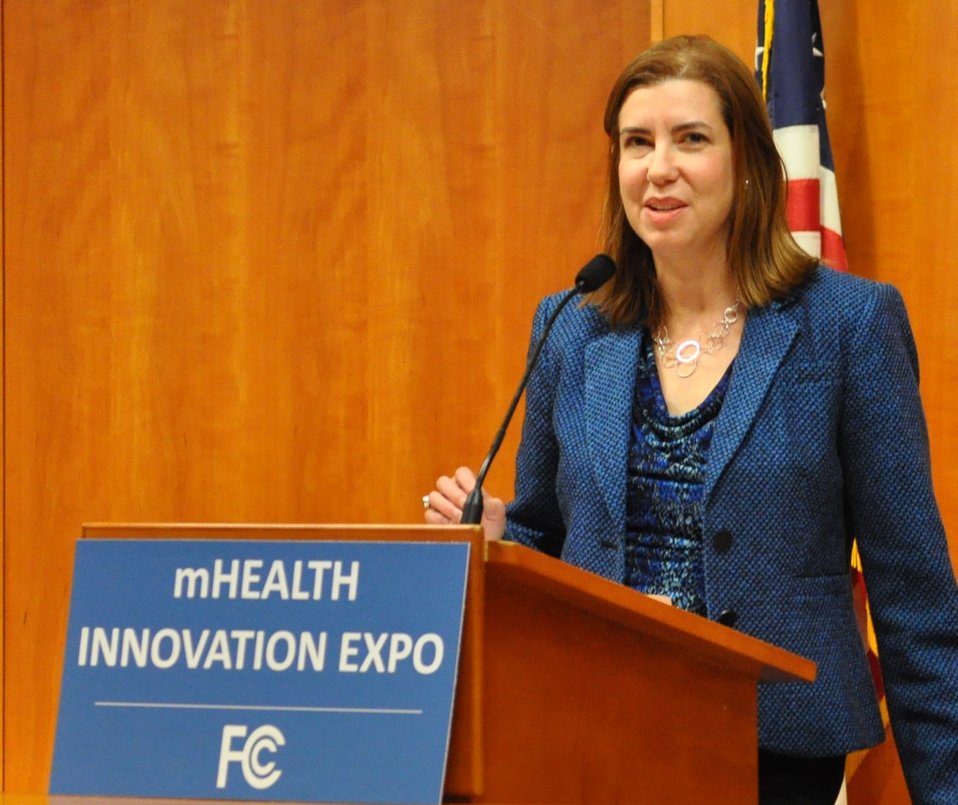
12.6.13 mHealth Innovation Expo

Lygeia Ricciardi, Director of the Office of Consumer eHealth, ONC